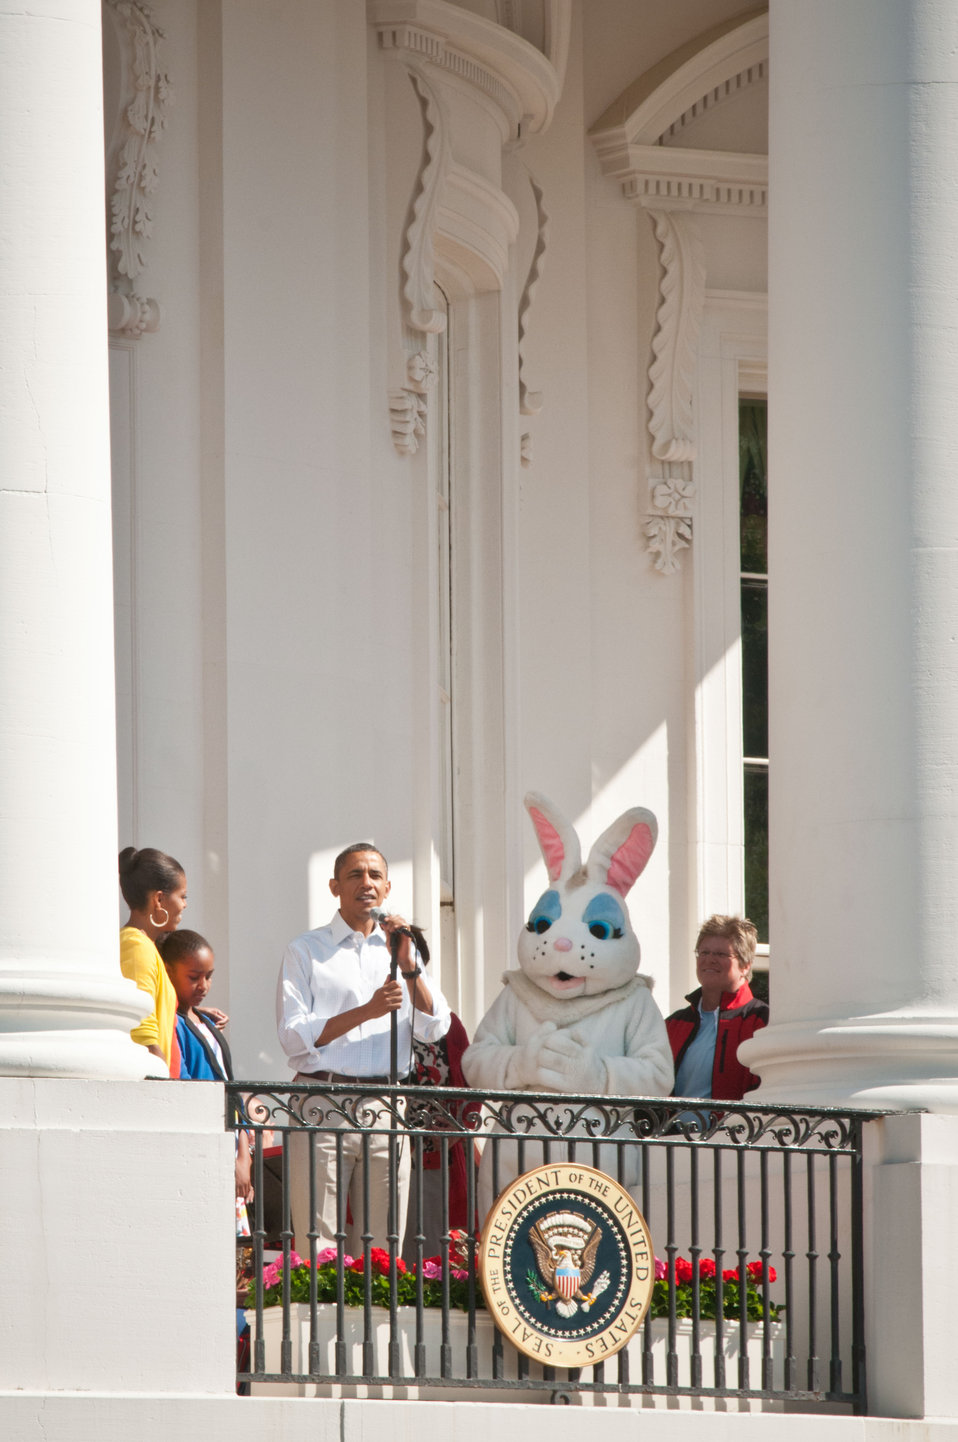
President Barack Obama, First Lady Michelle Obama, daughter Sasha and the Easter Bunny welcome visitors to the White House Easter Egg Roll on Monday, April 9, 2012 in Washington, D.C. This year’s Easter Egg Roll is the 134th year of the largest annual public event held at the White House. This year’s theme is “Let’s Go, Let’s Play, Let’s Move!” The theme is the emphasis of First Lady Michelle Obama’s Let’s Move initiative promoting health and wellness and encouraging children to lead healthy and active lives to solve the problem of childhood obesity.